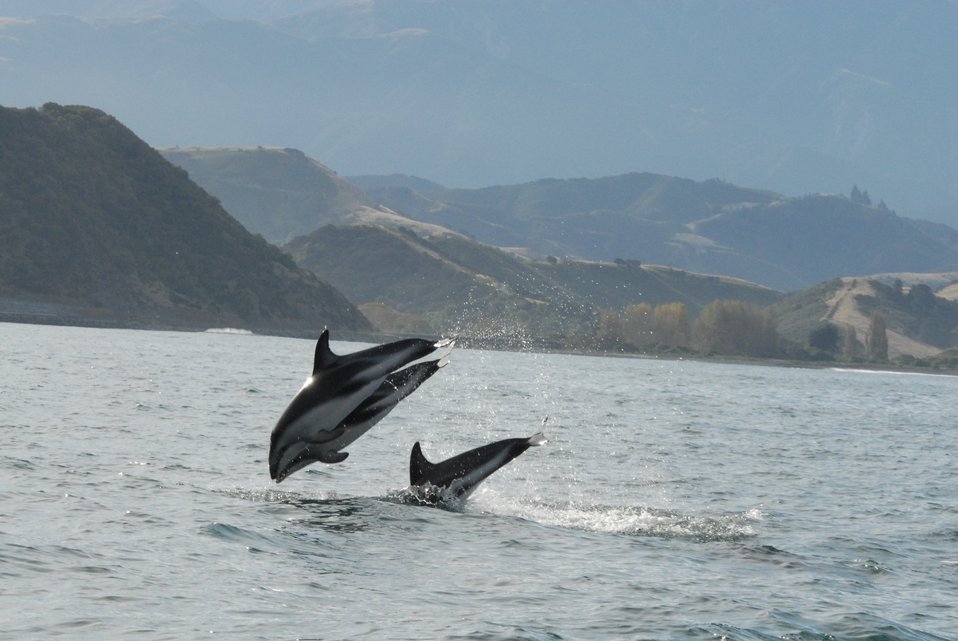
Dusky dolphin (Lagenorhynchus obscurus)